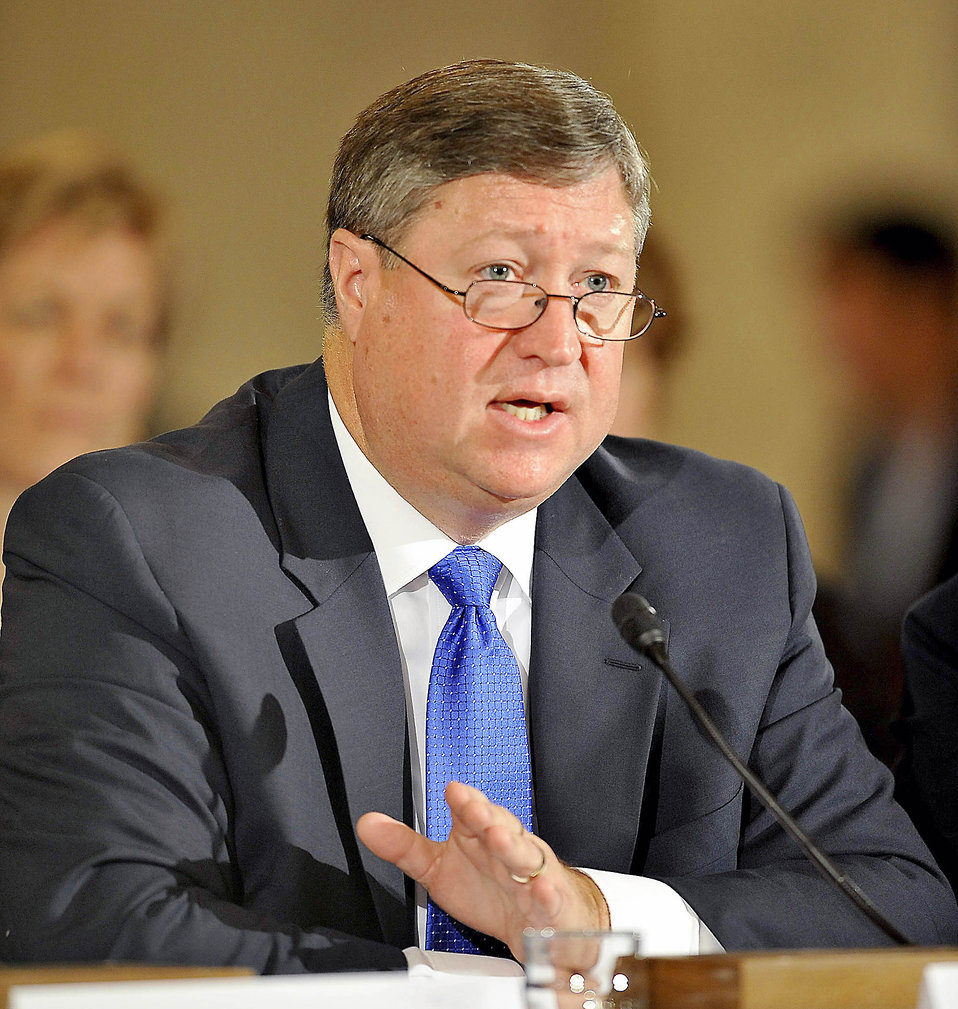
Senate confirmation hearing for Air Force leaders

Michael B. Donley testifies July 22 before the Senate Armed Services Committee during a hearing to examine his nomination as secretary of the Air Force. He has been the service's acting secretary for a month.